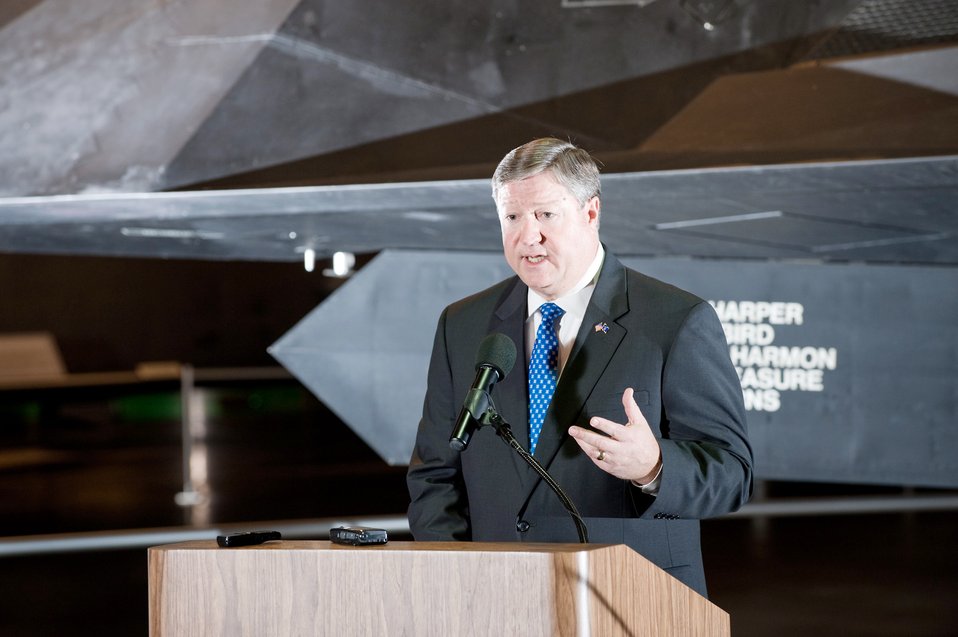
Doolittle Raiders 68th reunion

Secretary of the Air Force Michael Donley spoke at the 68th reunion of the Doolittle Tokyo Raiders April 16, 2010, at the National Museum of the U.S. Air Force at Wright-Patterson Air Force Base, Ohio.